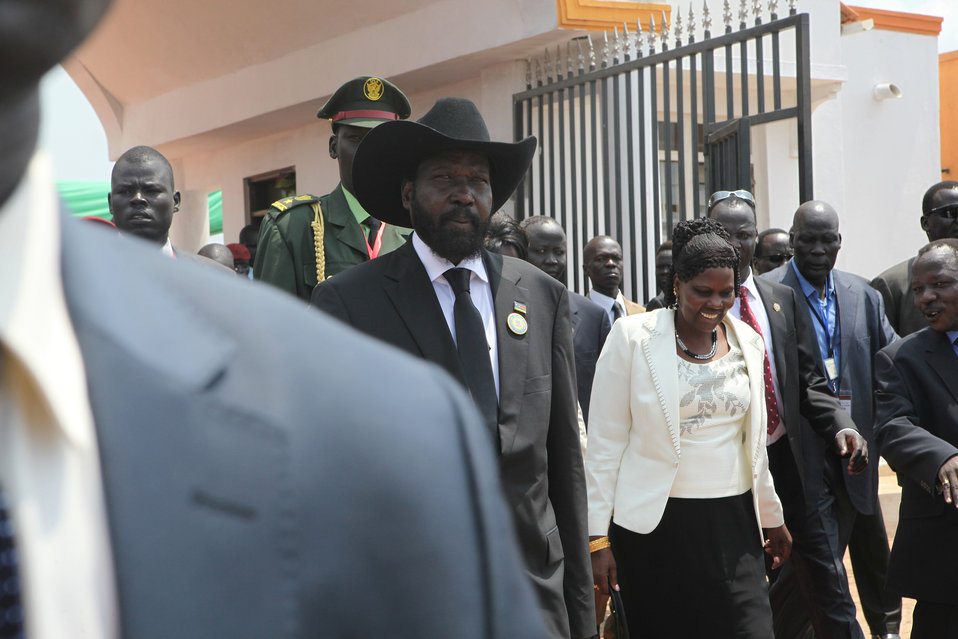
South Sudan Independence Day

H.E. Salva Kiir Mayardit, President of the Republic of South Sudan, greets guests at the Independence Day celebrations in Juba, South Sudan on July 9, 2011.